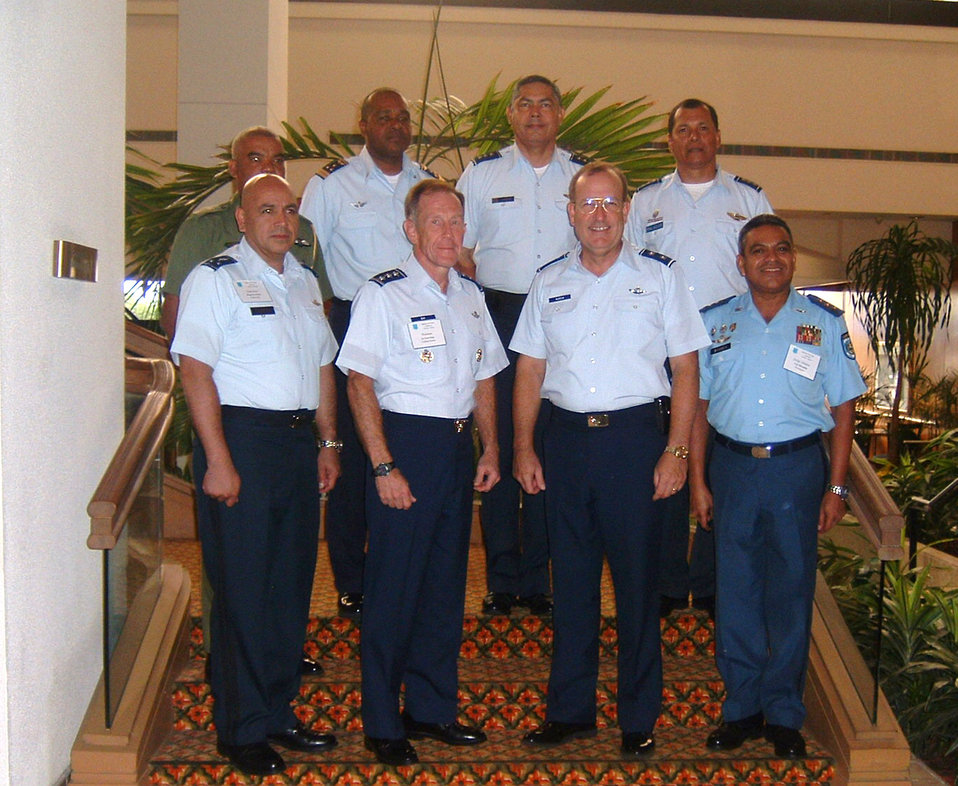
AFSOUTH, AFNORTH host Central American Air Chiefs Conference

Lt. Gen. Norman Seip, the 12th Air Force (Air Forces Southern) commander, and Maj. Gen. Henry Morrow, the 1st Air Force commander, hosted a Central American Air Chiefs Conference in Miami, July 25, for six air chiefs from Belize, El Salvador, Guatemala, Honduras, Nicaragua and Panama.